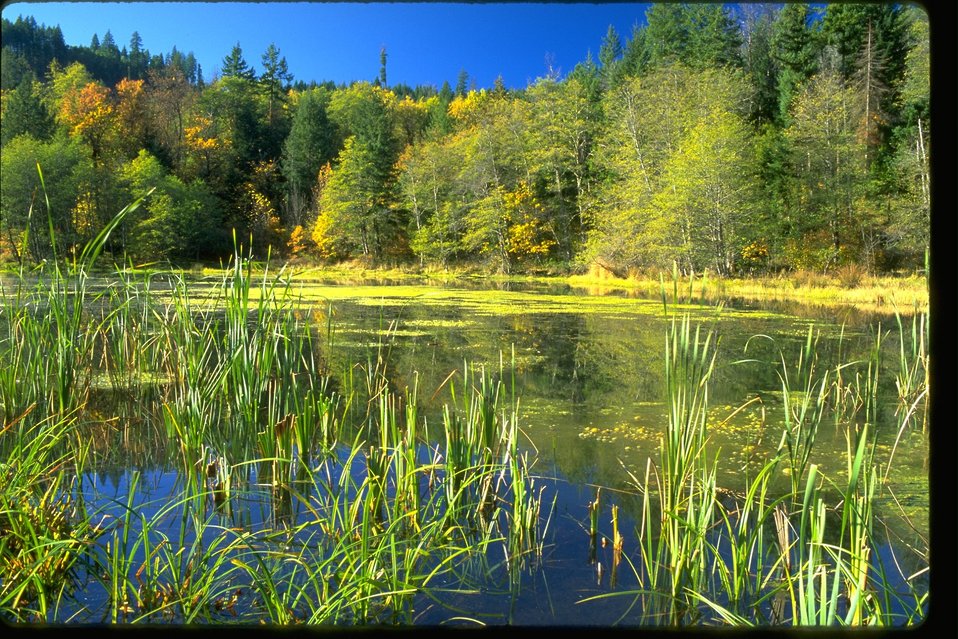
Pond in the Elk Creek drainage area.